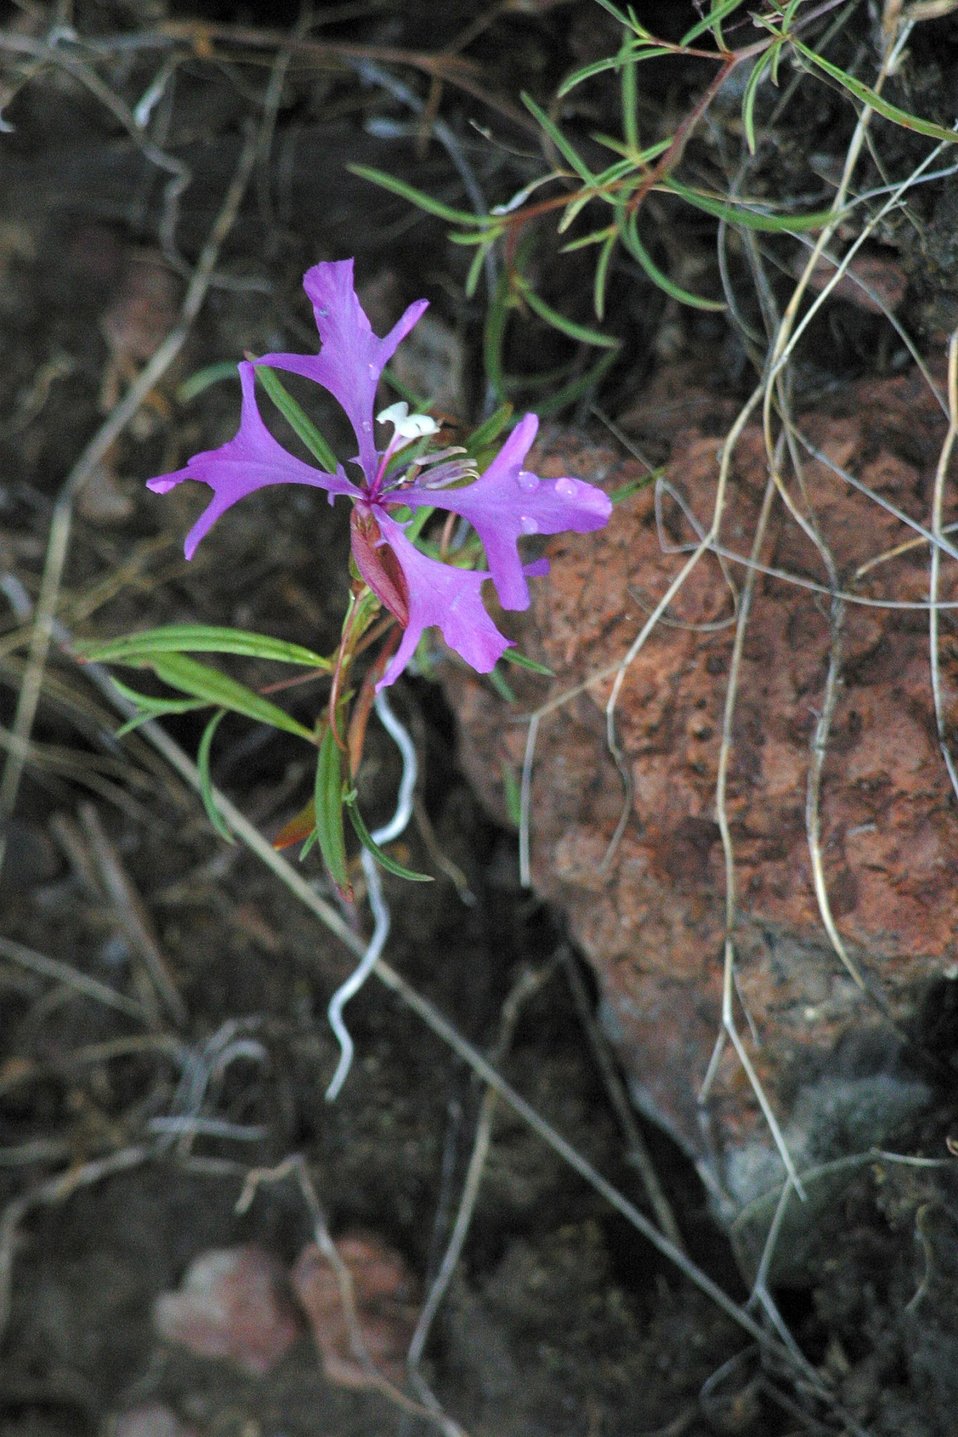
Clarkia in the Kiger Wild Horse Herd Management Area. Clarkia pulchella